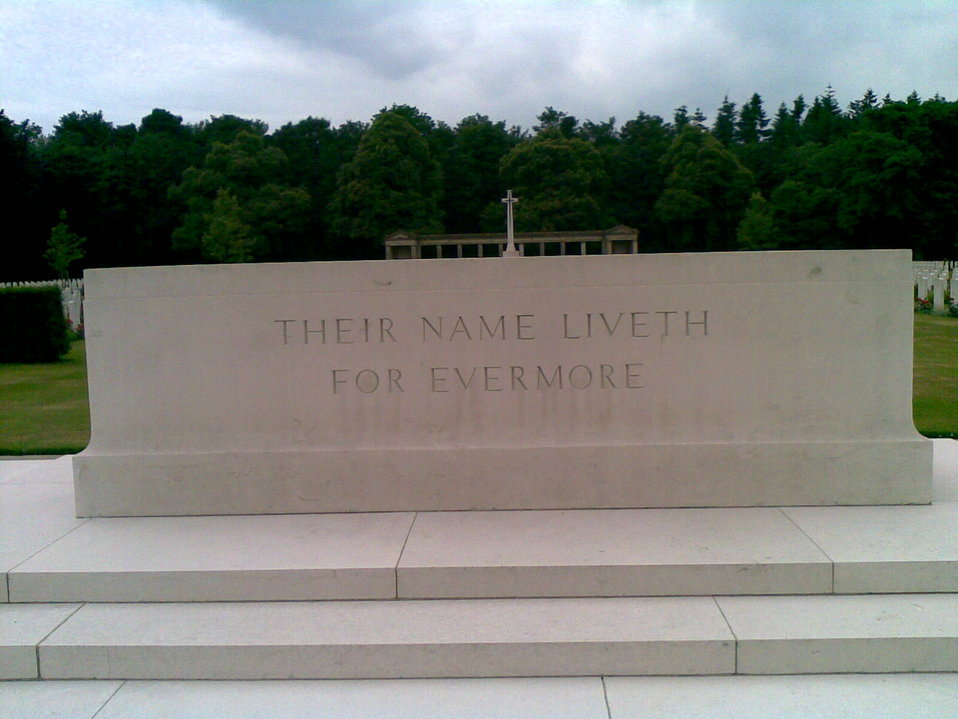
Deutsch: Rheinberg War Cemetery- Altarstein mit Aufschrift